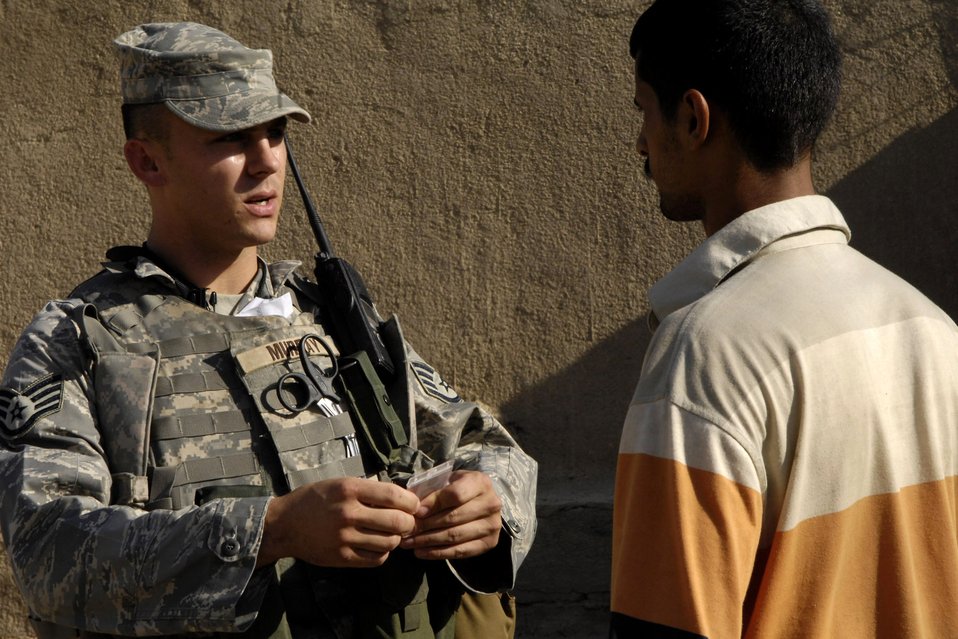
Airmen patrol the streets of Baghdad

Staff Sgt. J.D. Murray deployed from Lackland Air Force Base, Texas, and assigned to the 732nd Expeditionary Security Forces Squadron, Det. 4, conducts a badge check during a dismounted patrol in an effort to keep escort violations at a minimum in the international zone.